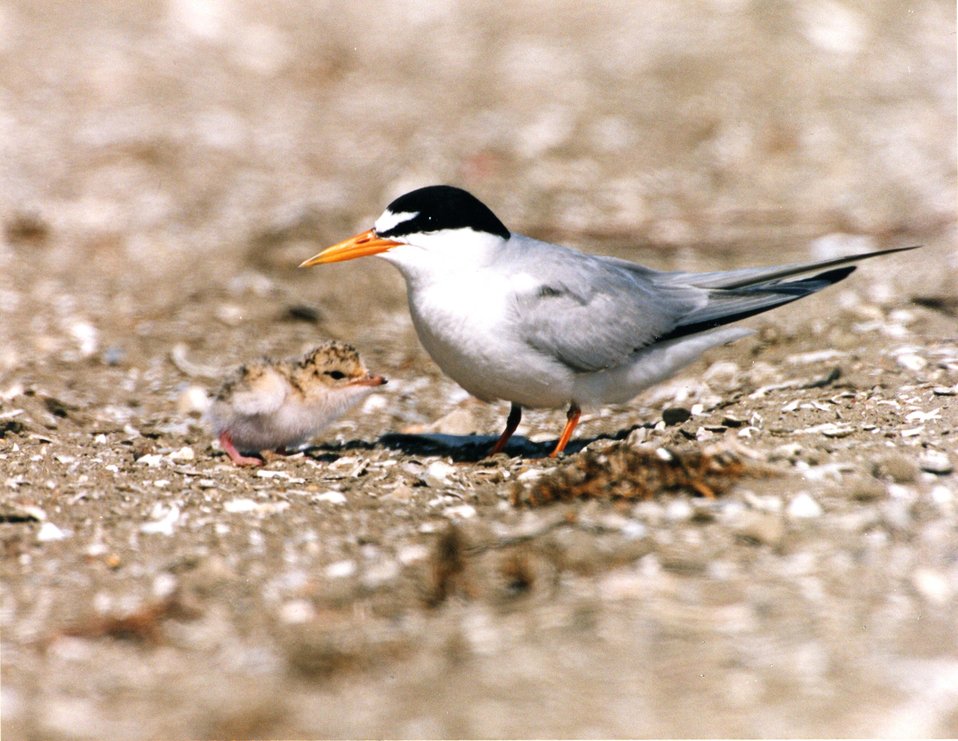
California Least tern adult with chick